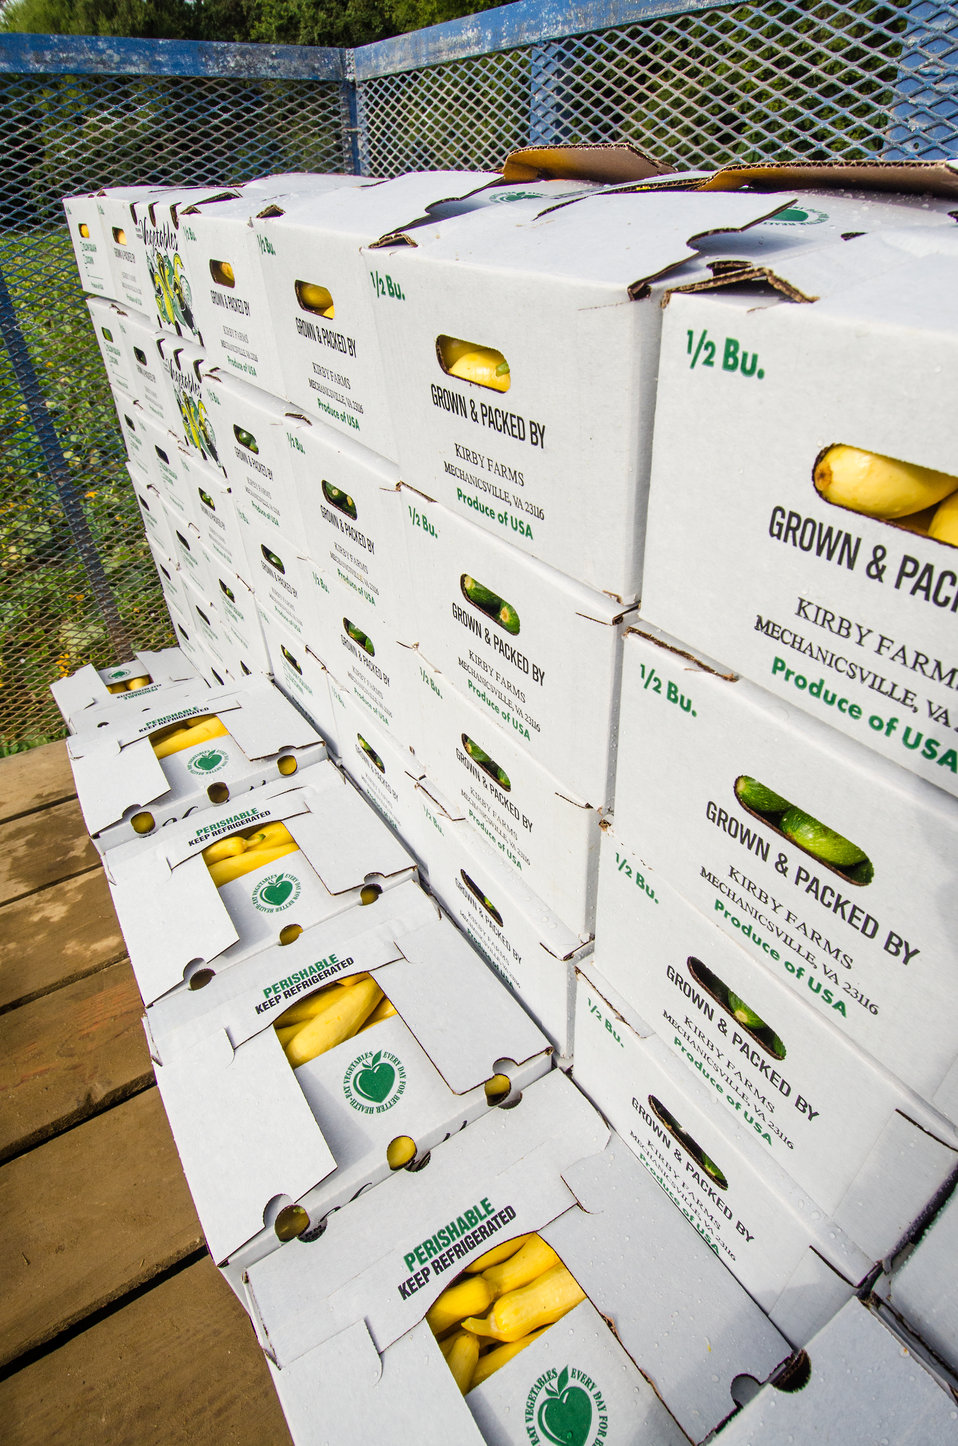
1/2-bushel boxes of green and yellow squash sit on a processing trailer. The rinsed, packed and just-picked yellow squash are ready to be sent to a shipping warehouse on Kirby Farms in Mechanicsville, VA on Sep. 20, 2013. Kirby Farms is a third-generation family farm that covers 500 acres, and generates produce and grains on a year-around operation.